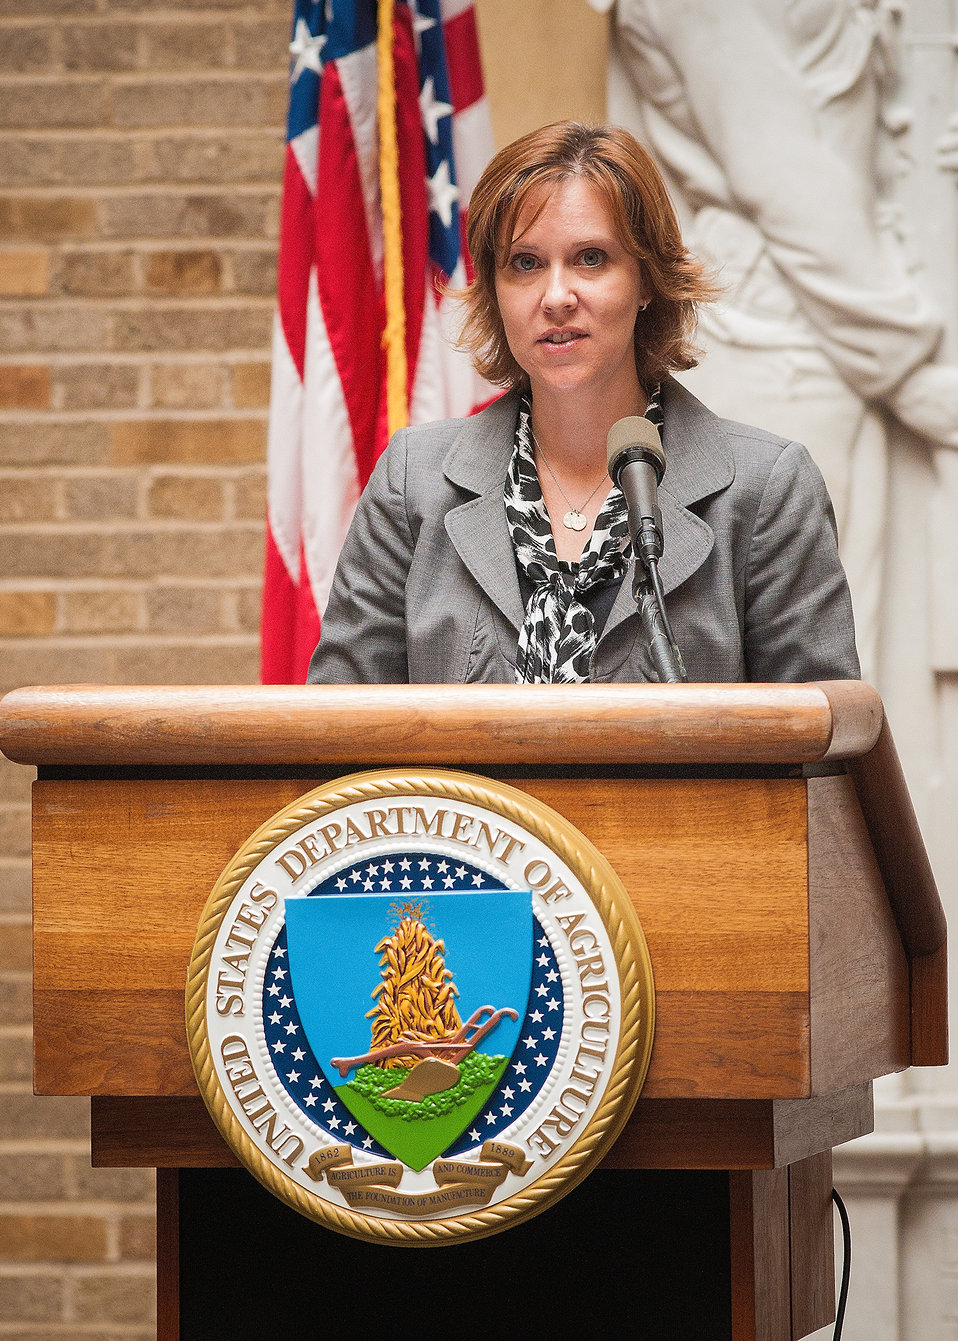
Deputy Undersecretary, Farm and Foreign Agricultural Services Darcy Vetter welcomes representatives of the Taiwan 2013 Goodwill Trade Mission to the United States Department of Agriculture in Washington, DC, Mon. Sept. 9, 2013.